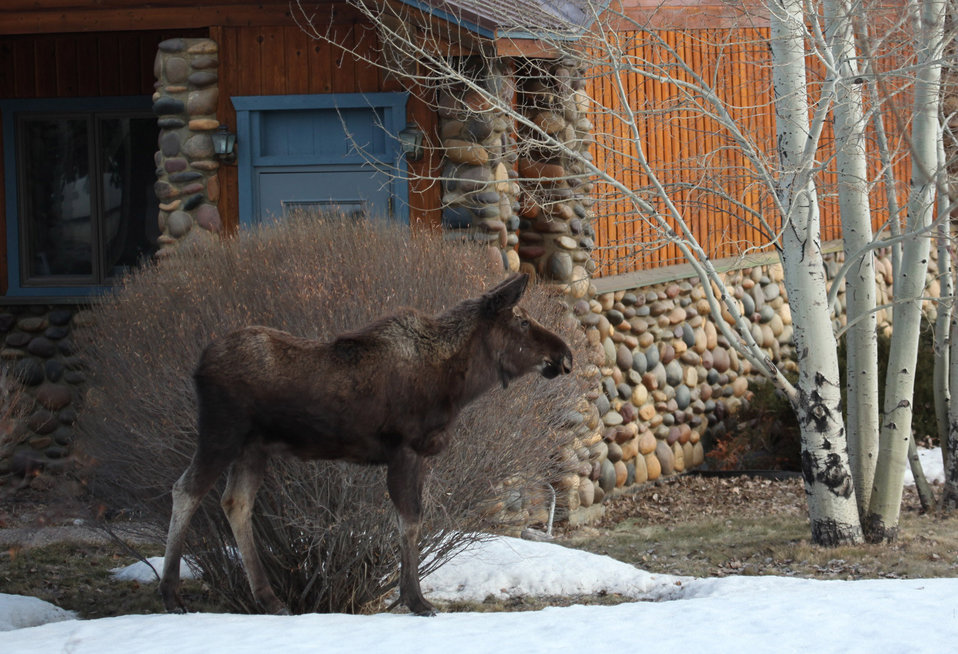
A surprise visitor greeted Refuge staff one March morning at the administrative offices. Moose can often be spotted in the town of Jackson in the spring.